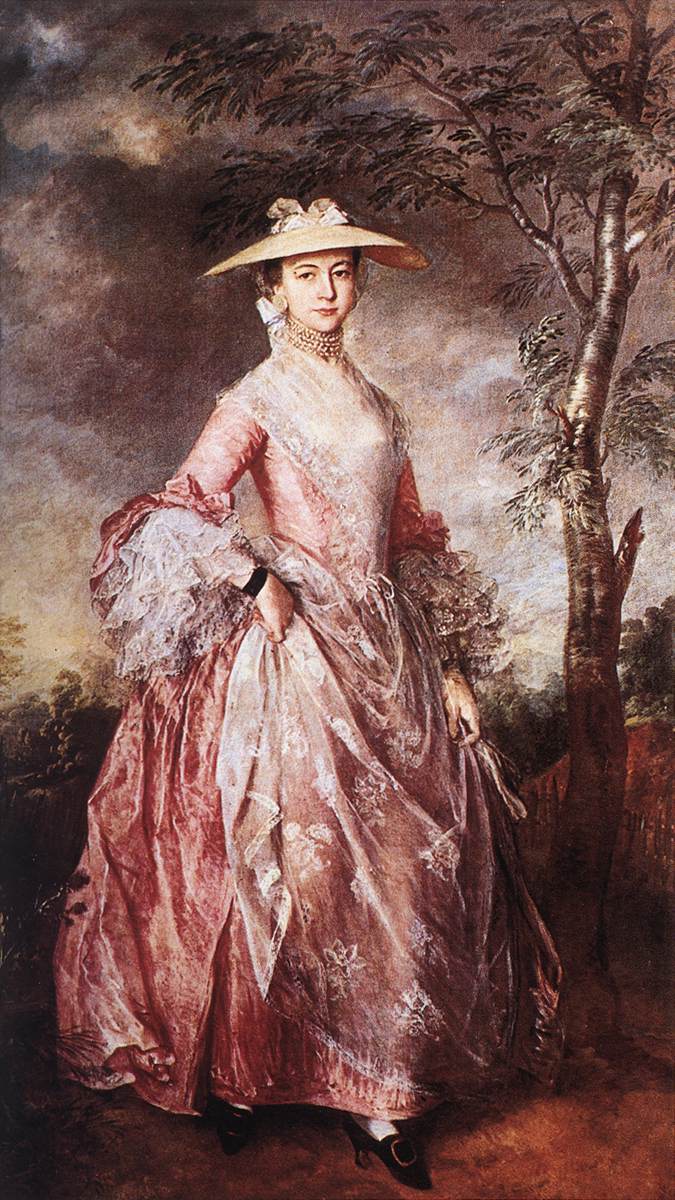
Thomas Gainsborough - Mary, Countess of Howe - WGA08407